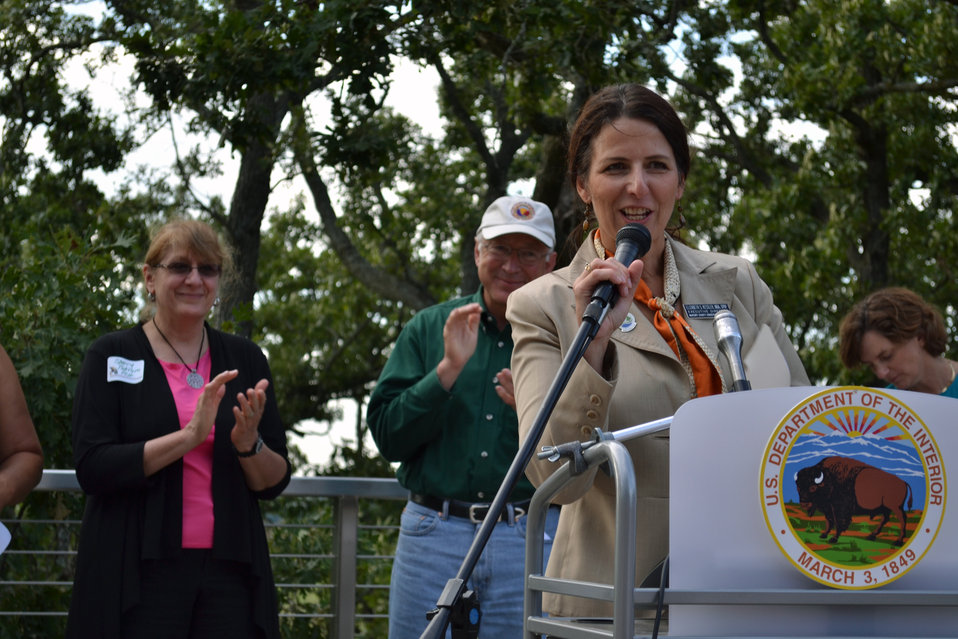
McHenry County Conservation District Executive Director Elizabeth Kessler welcomed everyone to the event.